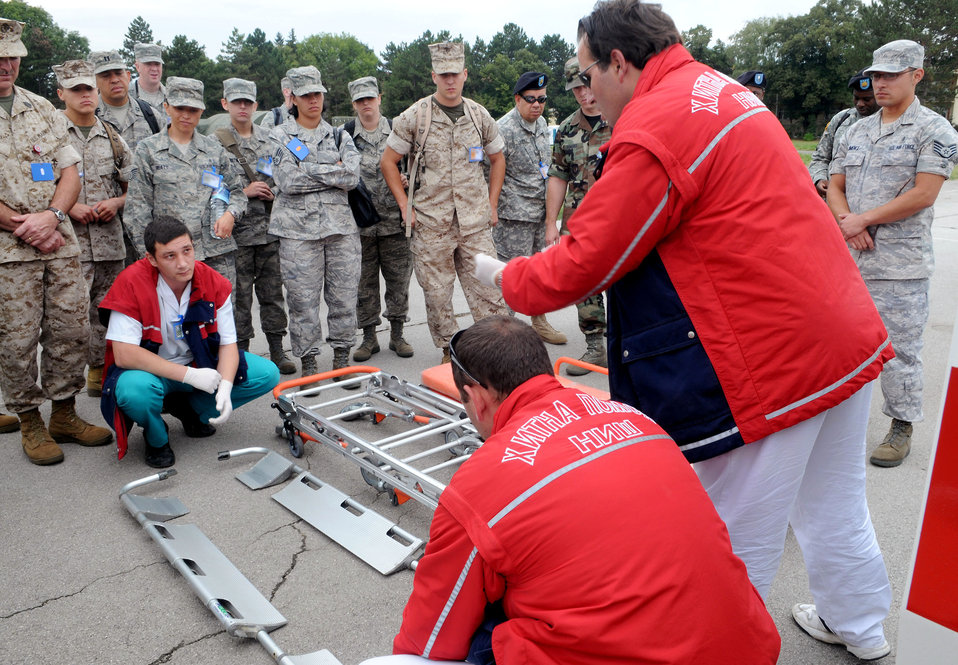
Airmen stand up medical squadron to support training exercise

Serbian Red Cross members explain medical evacuation procedures to U.S. troops during an exercise orientation Sept. 8, 2009, in Nis, Serbia. The Serbian Red Cross worked alongside a U.S. mobile hospital housing the 458th Expeditionary Medical Squadron.